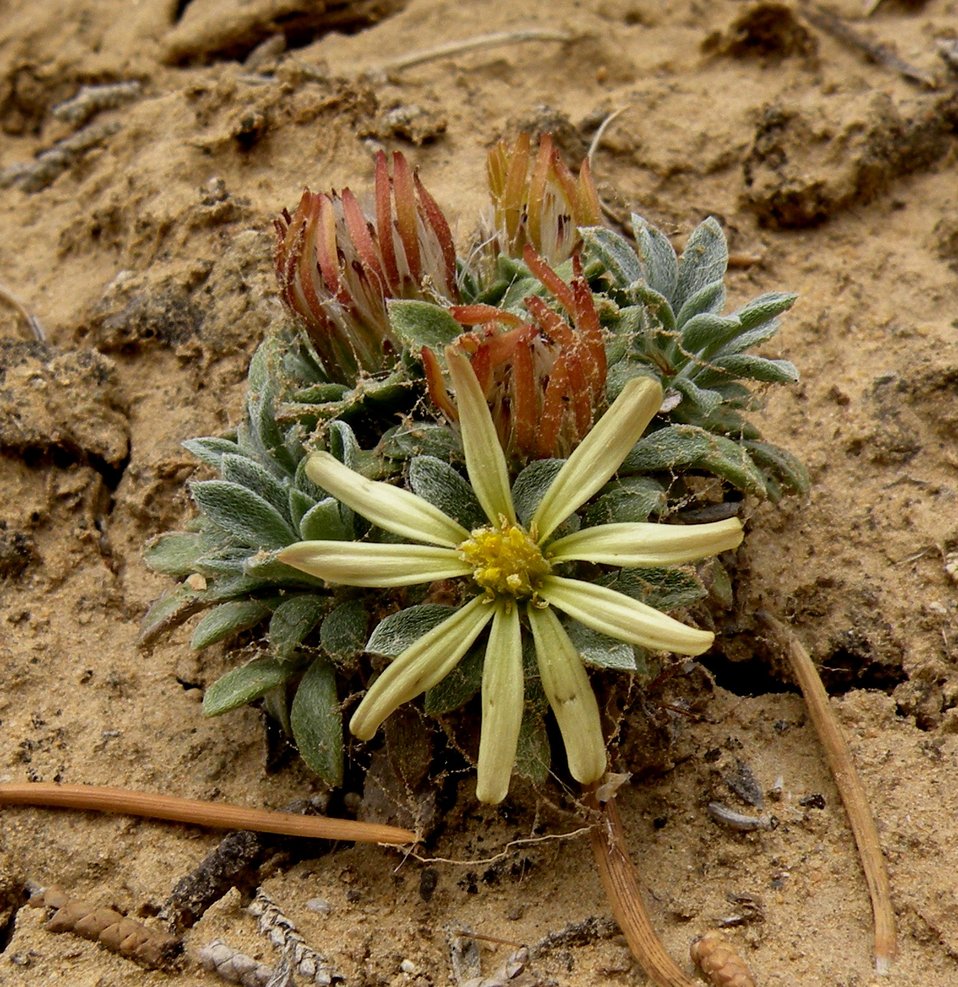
Last Chance townsendia (Townsendia aprica) is a diminutive perennial herb in the sunflower family. It is endemic to central Utah where it occurs in Emery, Sevier and Wayne counties. The species is associated with piñon-juniper and grassland communities between 6,100 and 8,000 feet in elevation. Habitat loss, degradation, and fragmentation are the largest threats this species faces today. Sources of these threats include coal mining, road developments, recreational off-road vehicle use, and grazing. It was listed threatened in 1985.